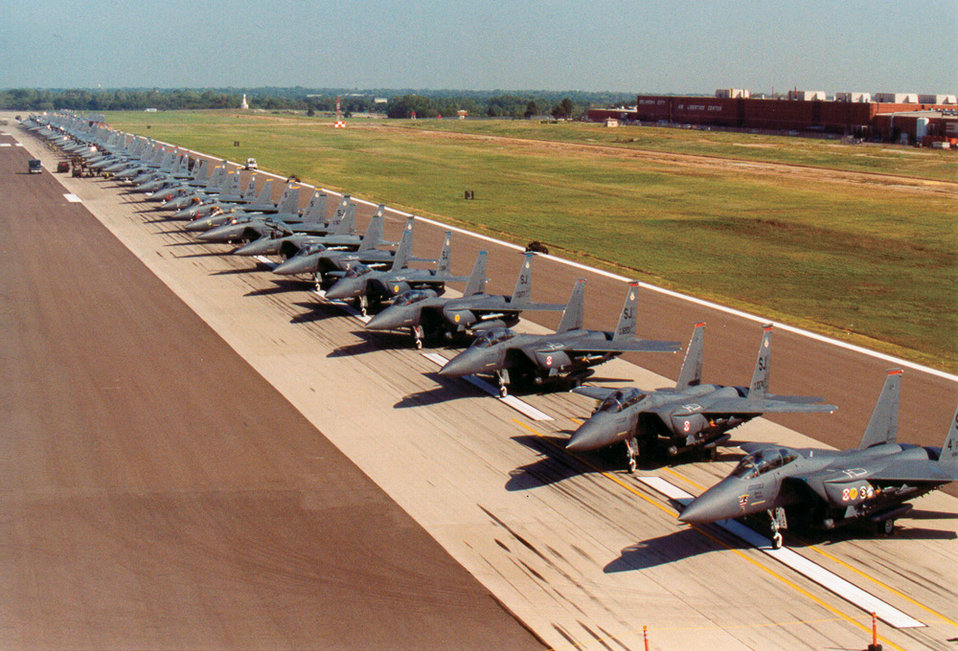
Standing by

TINKER AIR FORCE BASE, Okla. -- Seventy-five F-15E Strike Eagles from Seymour Johnson Air Force Base, N.C., are waiting out Hurricane Isabel on a runway here.